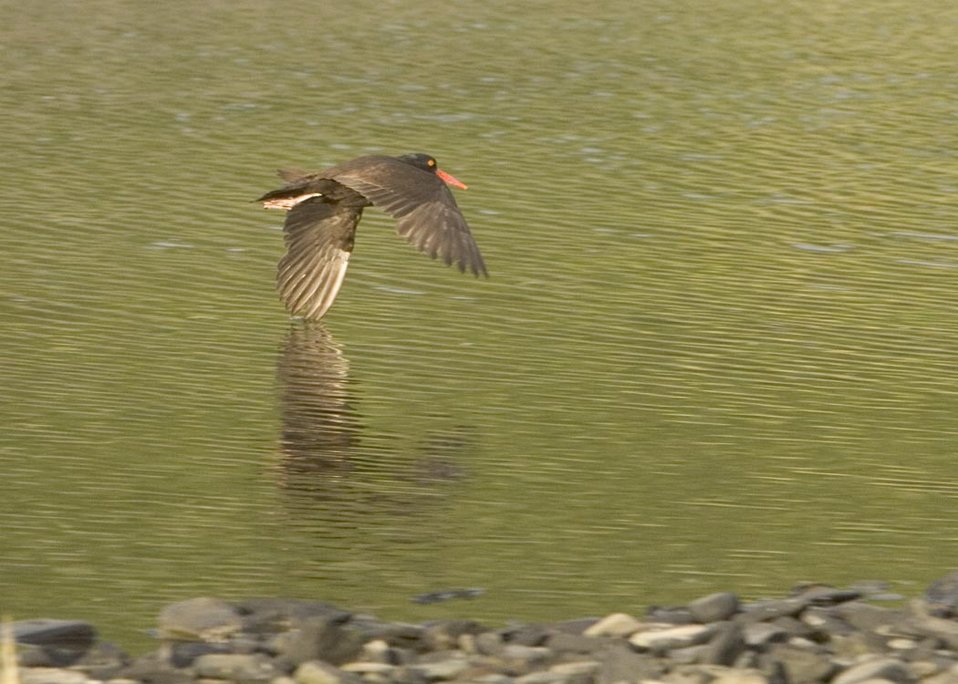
Black oystercatcher in flight on Nagai Island, Shumagins,